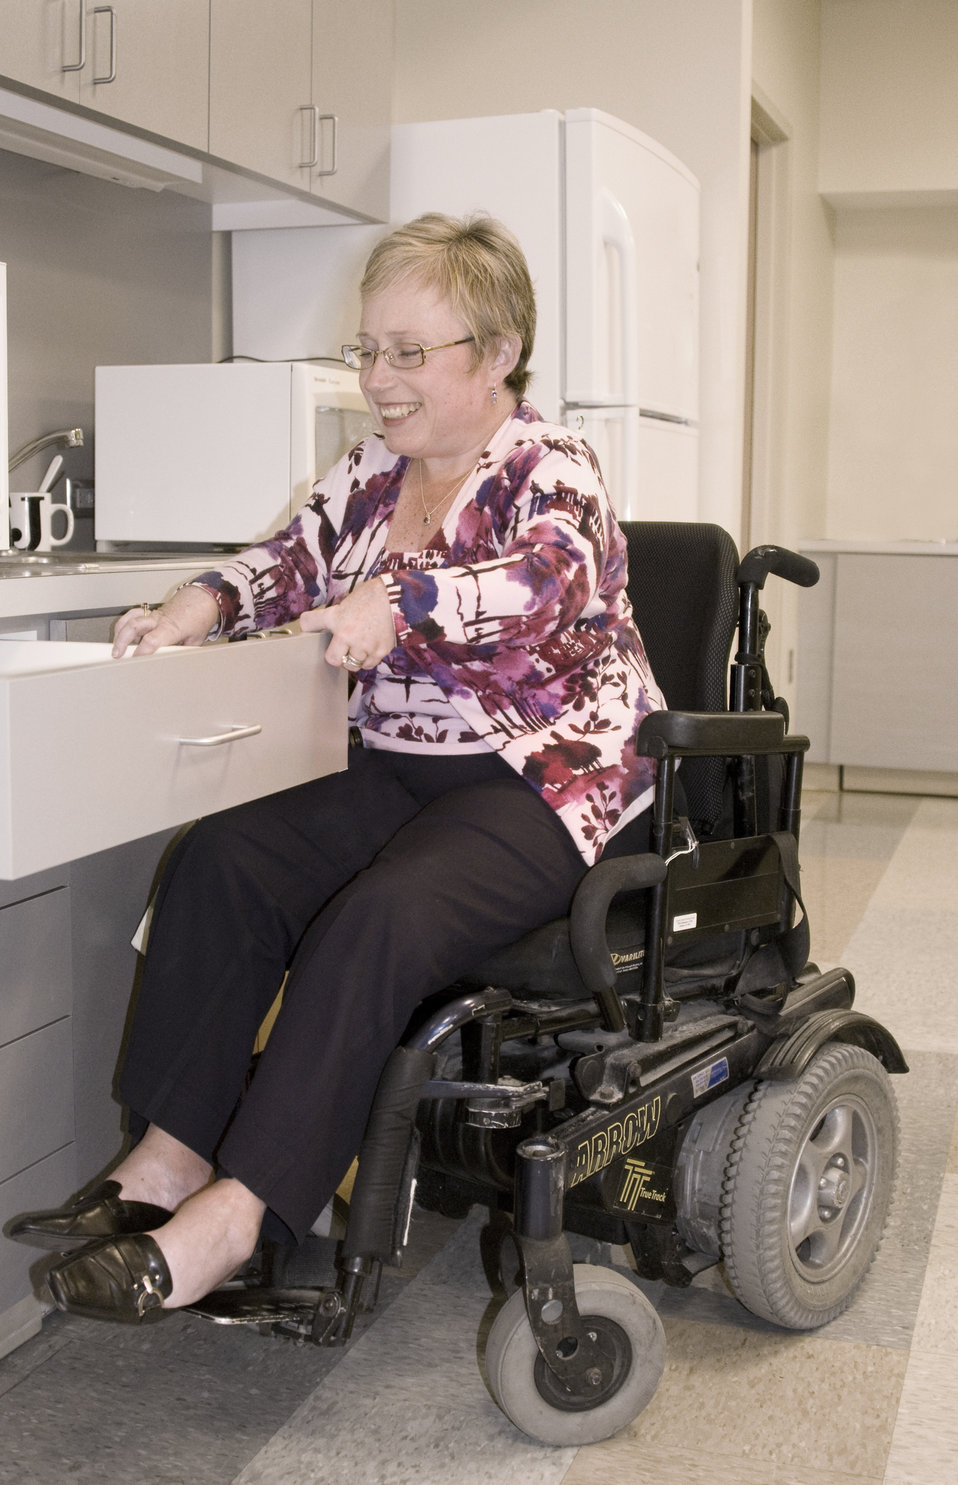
This woman who was seated in her wheelchair, was photographed in this kitchen setting while opening a cabinet drawer. Note that the height of the drawer was situated in a highly-accessible level to all who would need to place, or obtain contents from this location.